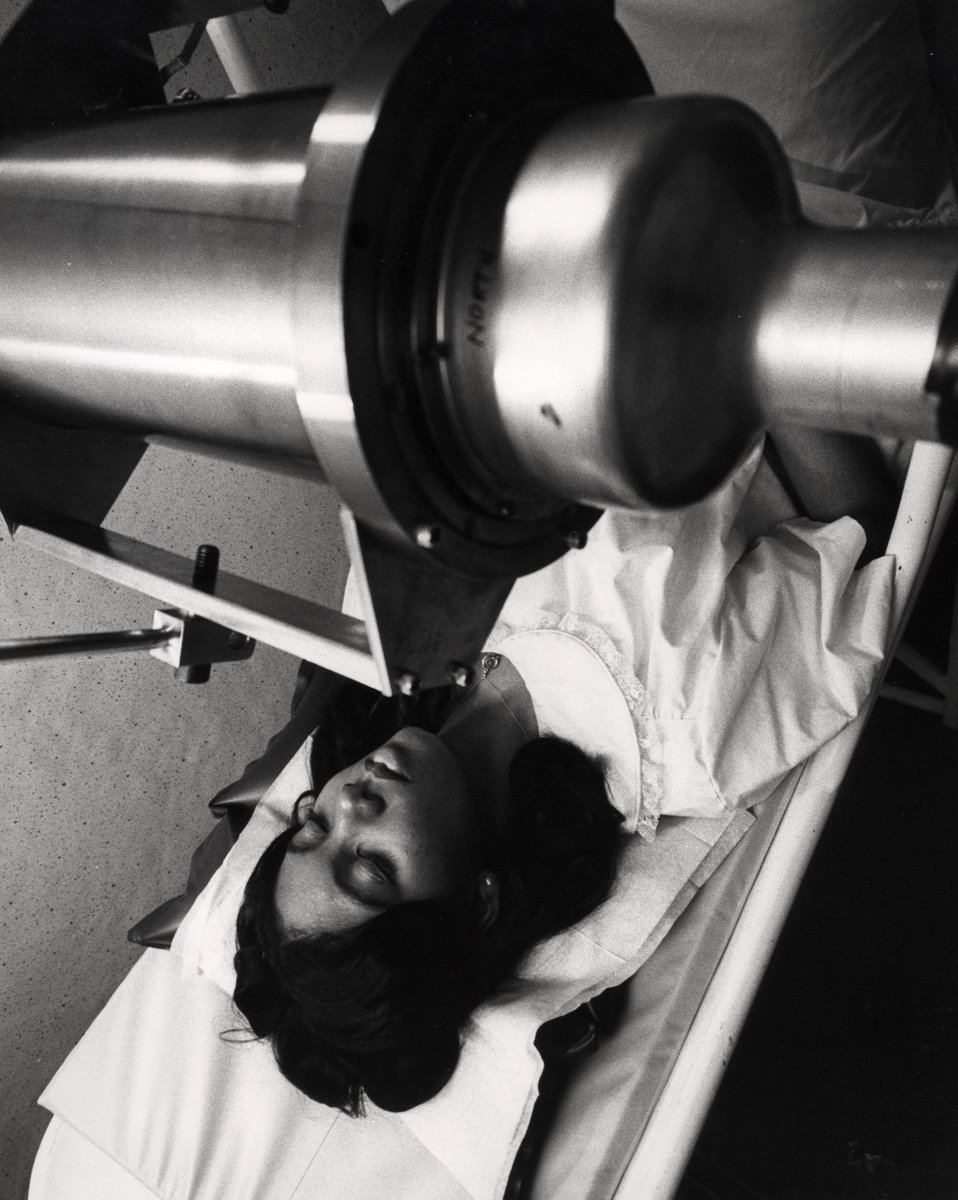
Specialized facilities to measure extremely small amounts of radiation in the human body are available in Argonne National Laboratory's Center for Human Radio biology.